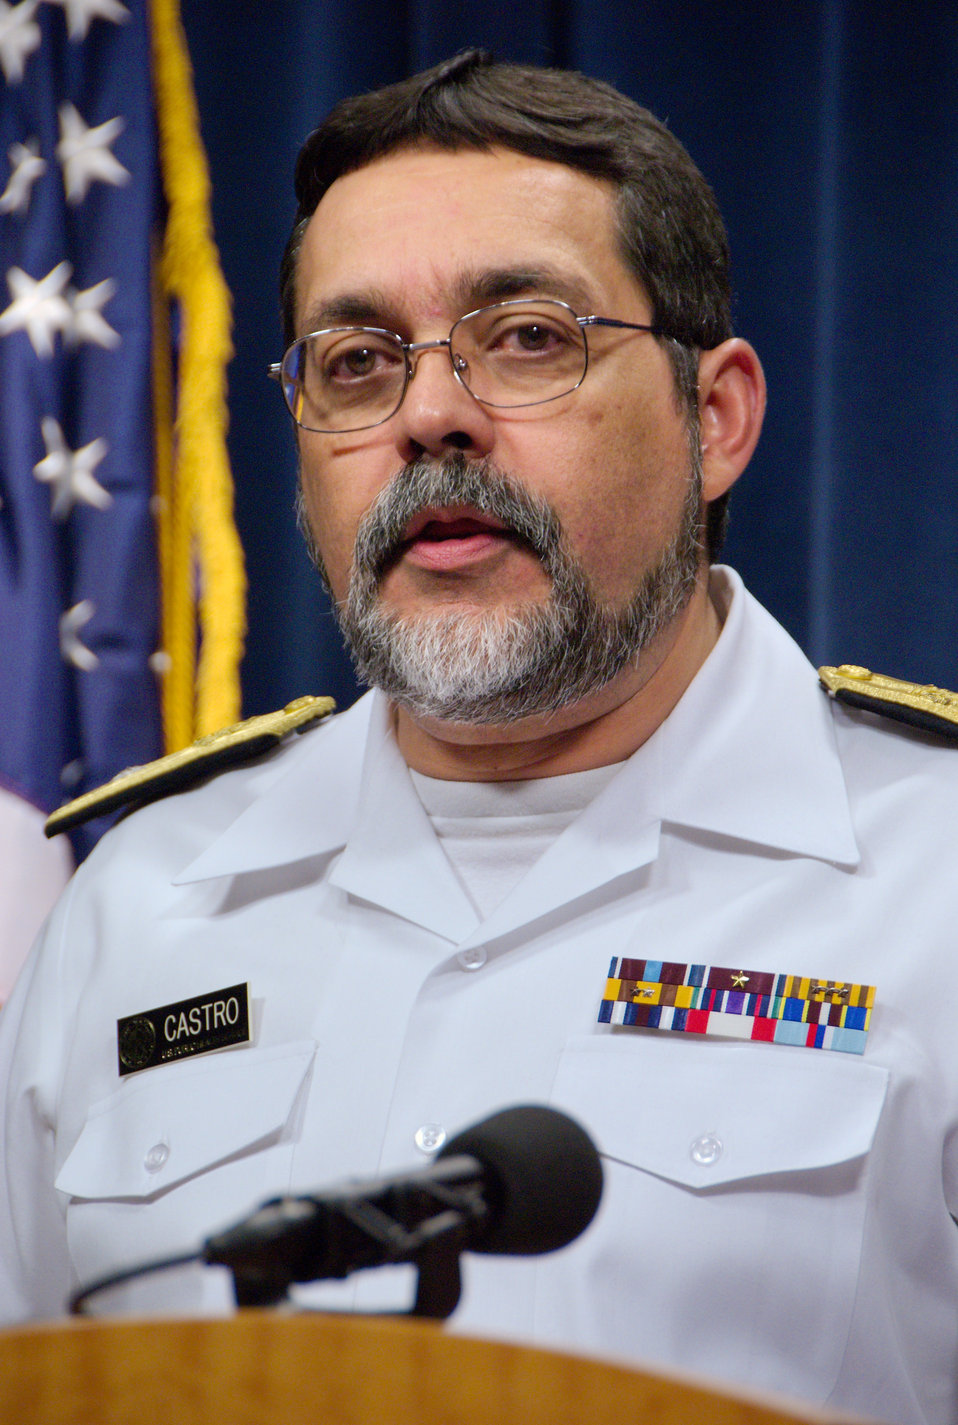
Dr. Kenneth Castro, CDC

This 2007 image depicted Centers for Disease Control's, Director of the Division of Tuberculosis Elimination, Dr. Kenneth Castro, presenting information at a press briefing regarding the organization's public health investigation into who may have been exposed to an extensively drug-resistant tuberculosis (XDR-TB) infected person. The information release included the action and steps that the CDC was taking in response to a case of XDR-TB in a United States citizen who'd undertaken international travel. XDR-TB is a recently defined subtype of a multi-drug resistant TB, which can cause severe illness and death.